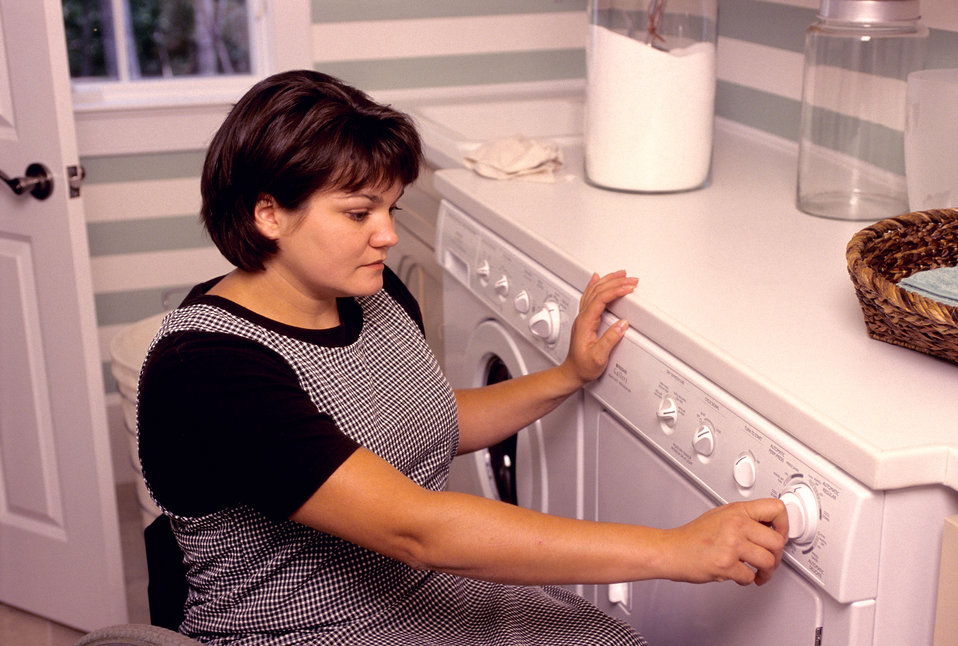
This 2000 image depicted a woman seated in her wheelchair, while she was manipulating the controls of a front-loading clothes dryer, which was located directly adjacent to a front-loading washing machine from which she'd just extracted the damp laundry load. Front-loading washers and dryers are easier to access, for a wider range of users than their top-loading versions. Many people who use wheelchairs, and have trouble bending over, or reaching, or are of short stature such as children, find that front-loading washers and dryers are easier to access. For some people, top loading machines are impossible to use, for one must reach over, and down into these appliances. In this four-image example (see PHIL 9388, 9389, 9390, and 9391), a child, an older adult, and a person using a wheelchair were all shown as benefiting from using the front-loading feature of this washer and dryer. Raised on a pedestal, they become even easier to use for many.